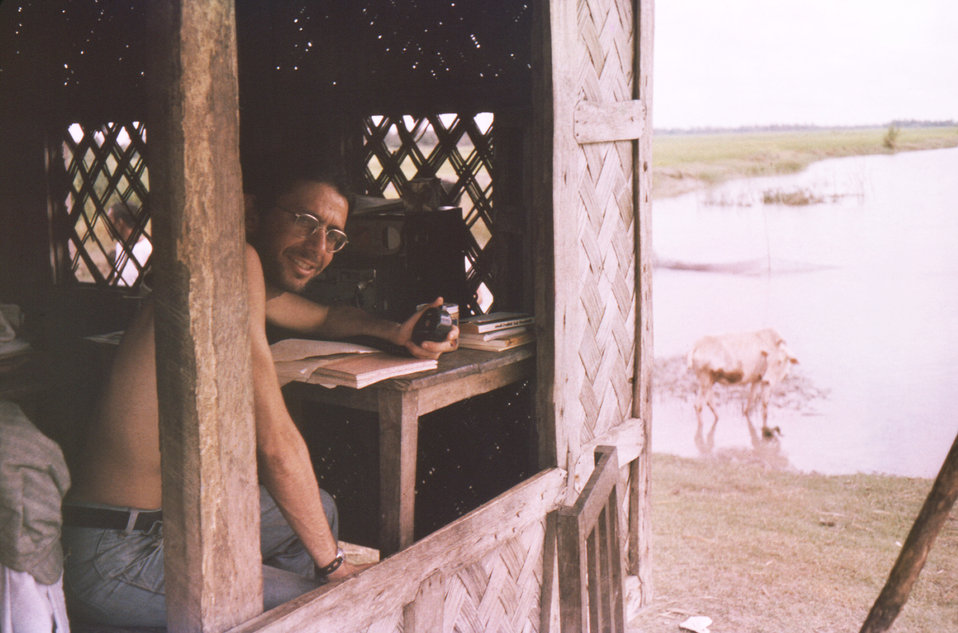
This September, 1975 photograph, showed Dr. Michael Schwartz at the 'Lord Harding Bazaar' Smallpox Office, as he was in the process of using a short wave radio. The Bazaar can be found on Bangladesh's largest island. Bhola Island.